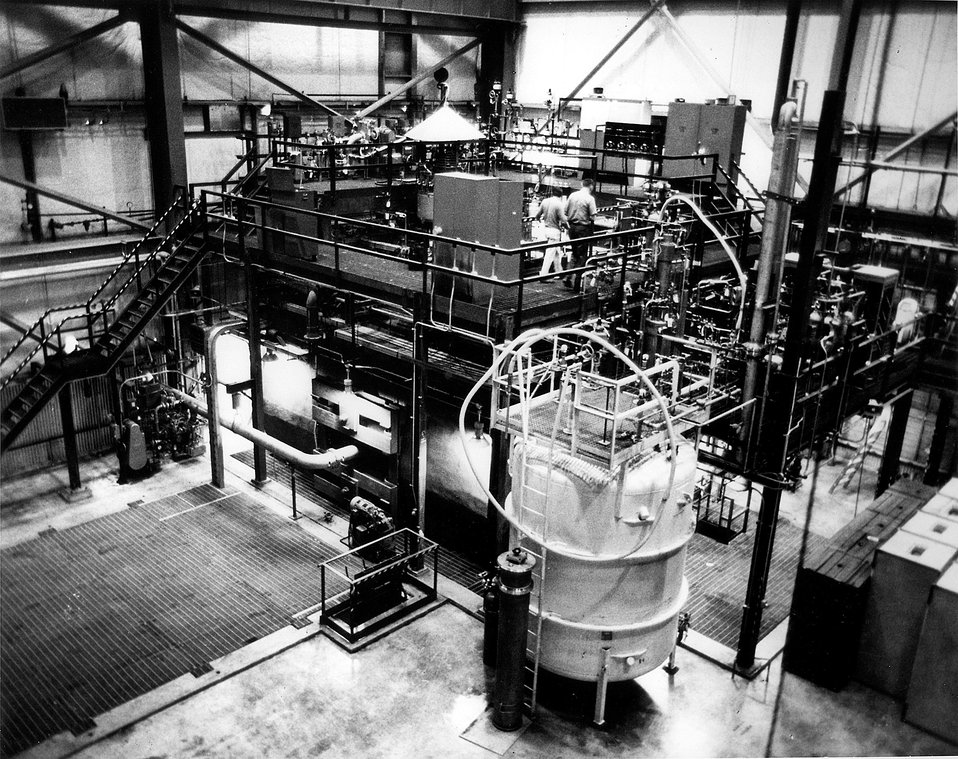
The 12-foot (diameter) hydrogen bubble chamber at Argonne.
c.1970